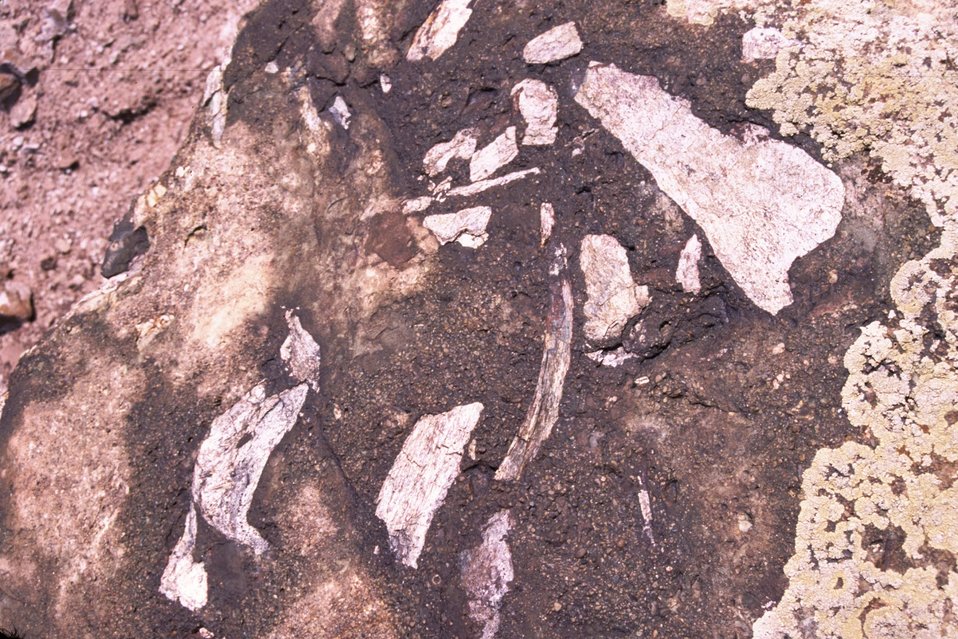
Dinosaur Bones in Matrix